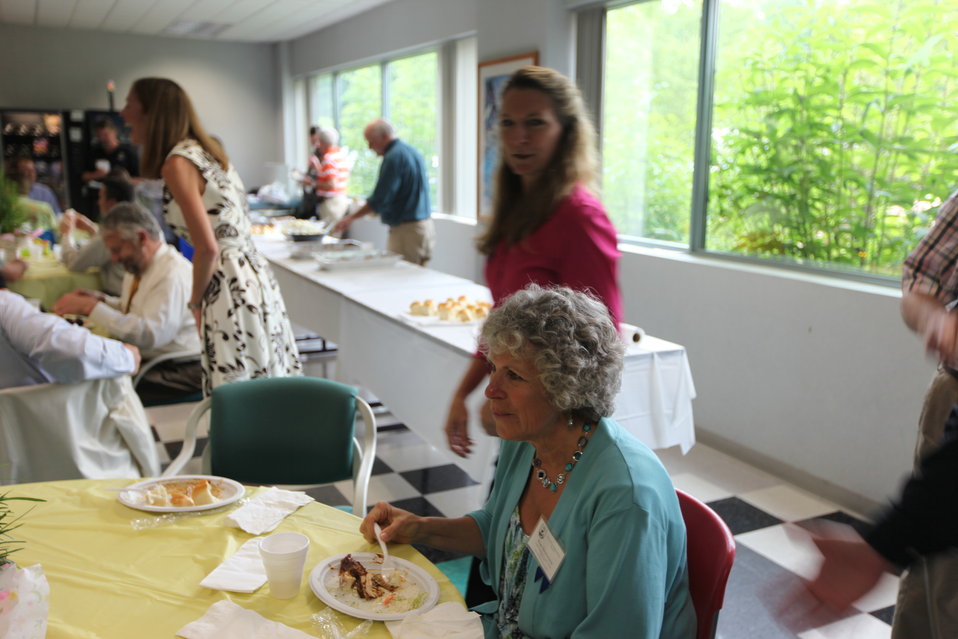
Northeast Region Employee Appreciation Awards

Luncheon